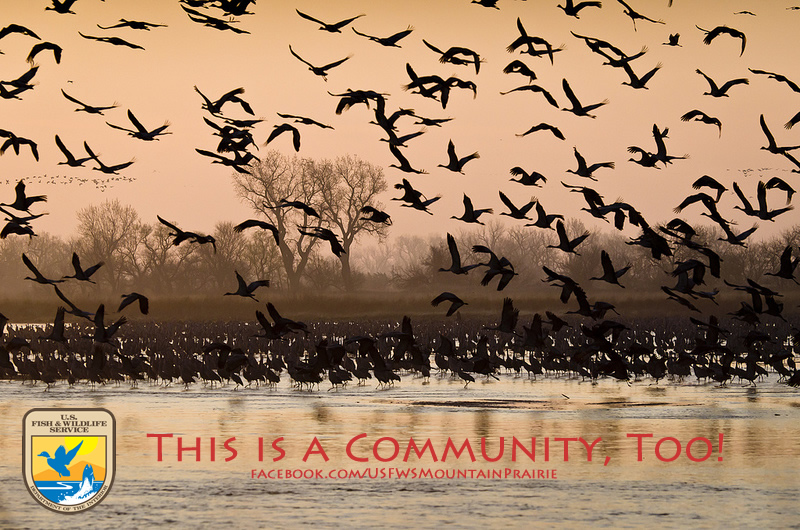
This is a Community, Too!